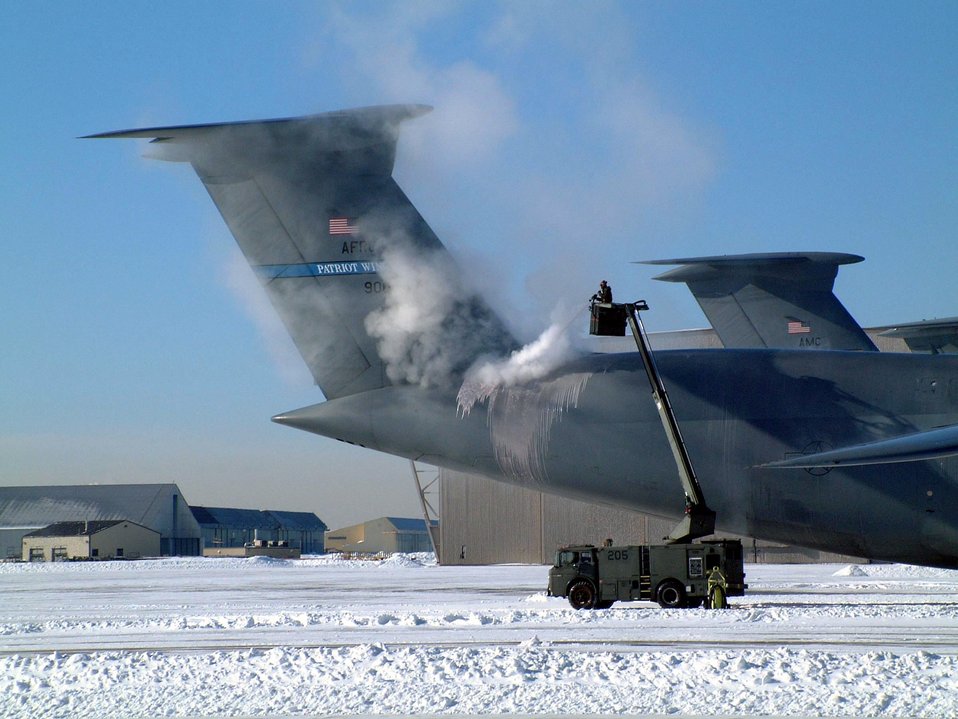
Big chill

WESTOVER AIR RESERVE BASE, Mass. -- Maintainers spray de-icer on a C-5 Galaxy after snowfall and a sudden plunge in temperatures March 7 left ice everywhere on Westover Air Reserve Base, Mass. The storm dropped 4.2 inches of snow, bringing the total for the season to 84 inches.